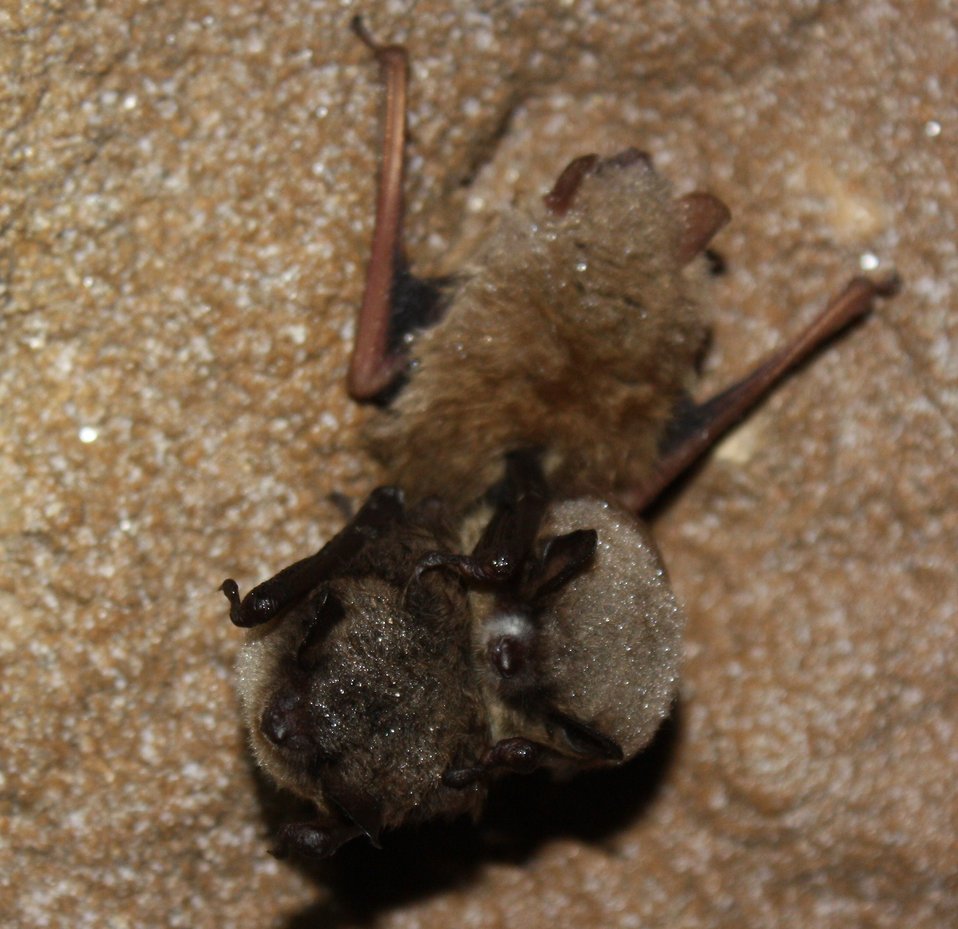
Little brown bat with WNS